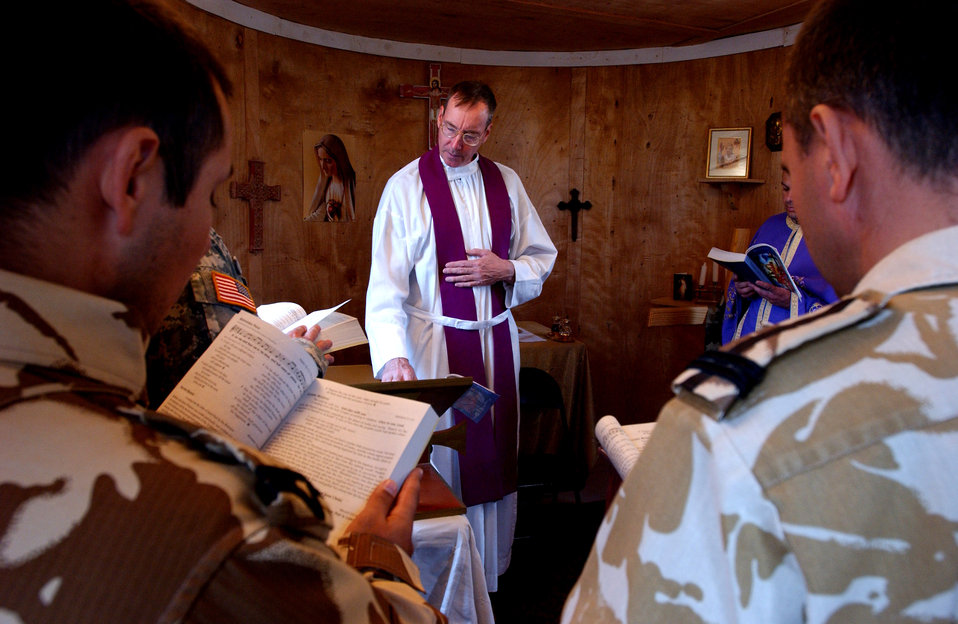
Air Force chaplain celebrates Mass for Romanians in Italian

Chaplain (Maj.) Timothy Hirten reads a prayer while Warrant Officer Ionut Gabriel Mittelbrun, left, and Lt. Col. Marian Popa, follow along with the reading Dec. 5 at the Romanian chapel on Ali Base, Iraq. Chaplain Hirten volunteers his time to help lead a Catholic Mass for coalition forces at the Romanian camp. The chaplain is assigned to the 407th Air Expeditionary Group Chapel and is deployed from Altus Air Force Base, Okla. Warrant Officer Mittelbrun and Colonel Popa are both assigned to the Romanian Army.